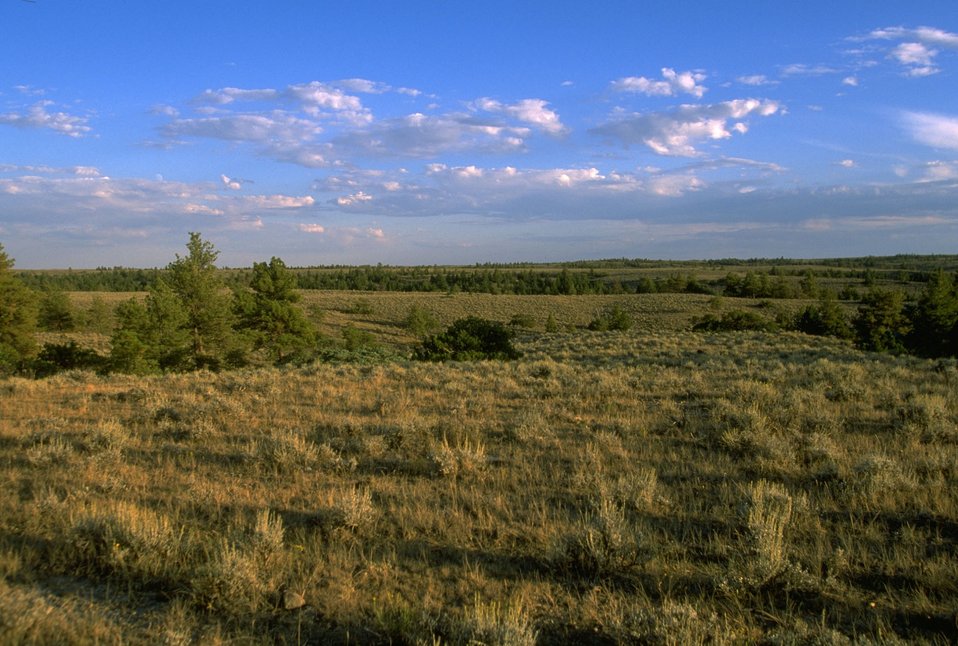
Missouri Breaks scenery